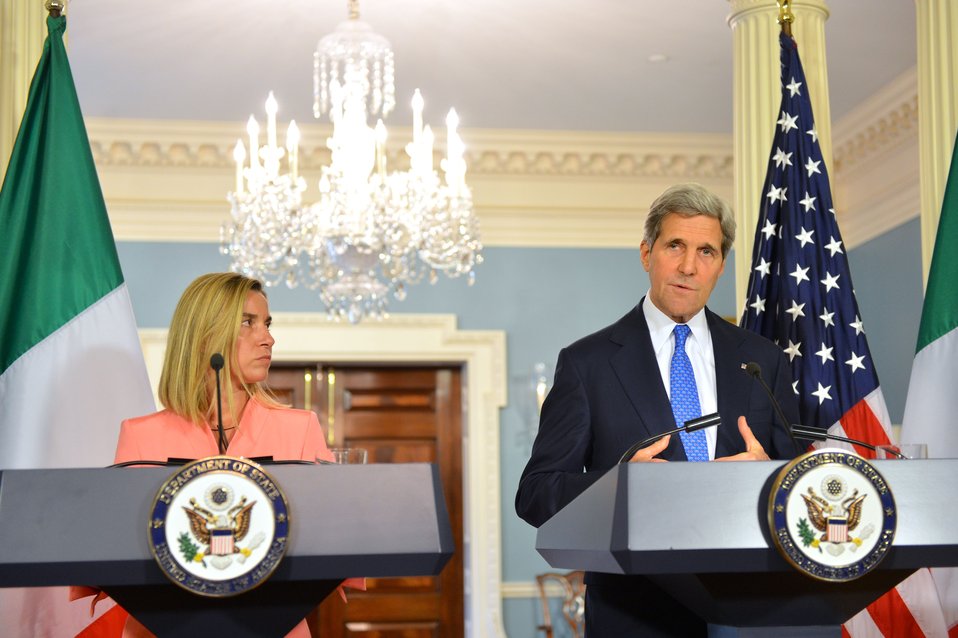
Secretary Kerry and Italian Foreign Minister Mogherini Hold a Joint News Conference

U.S. Secretary of State and Italian Foreign Minister Federica Mogherini hold a joint news conference after their bilateral meeting at the U.S. Department of State in Washington, D.C., on May 13, 2014.